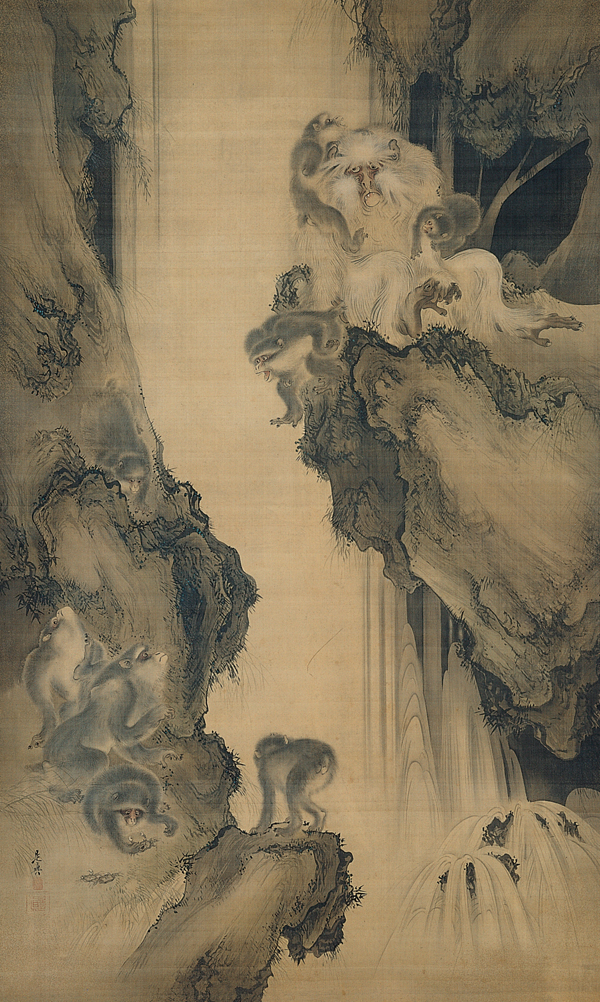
'Waterfall and Monkeys' by Shibata Zeshin